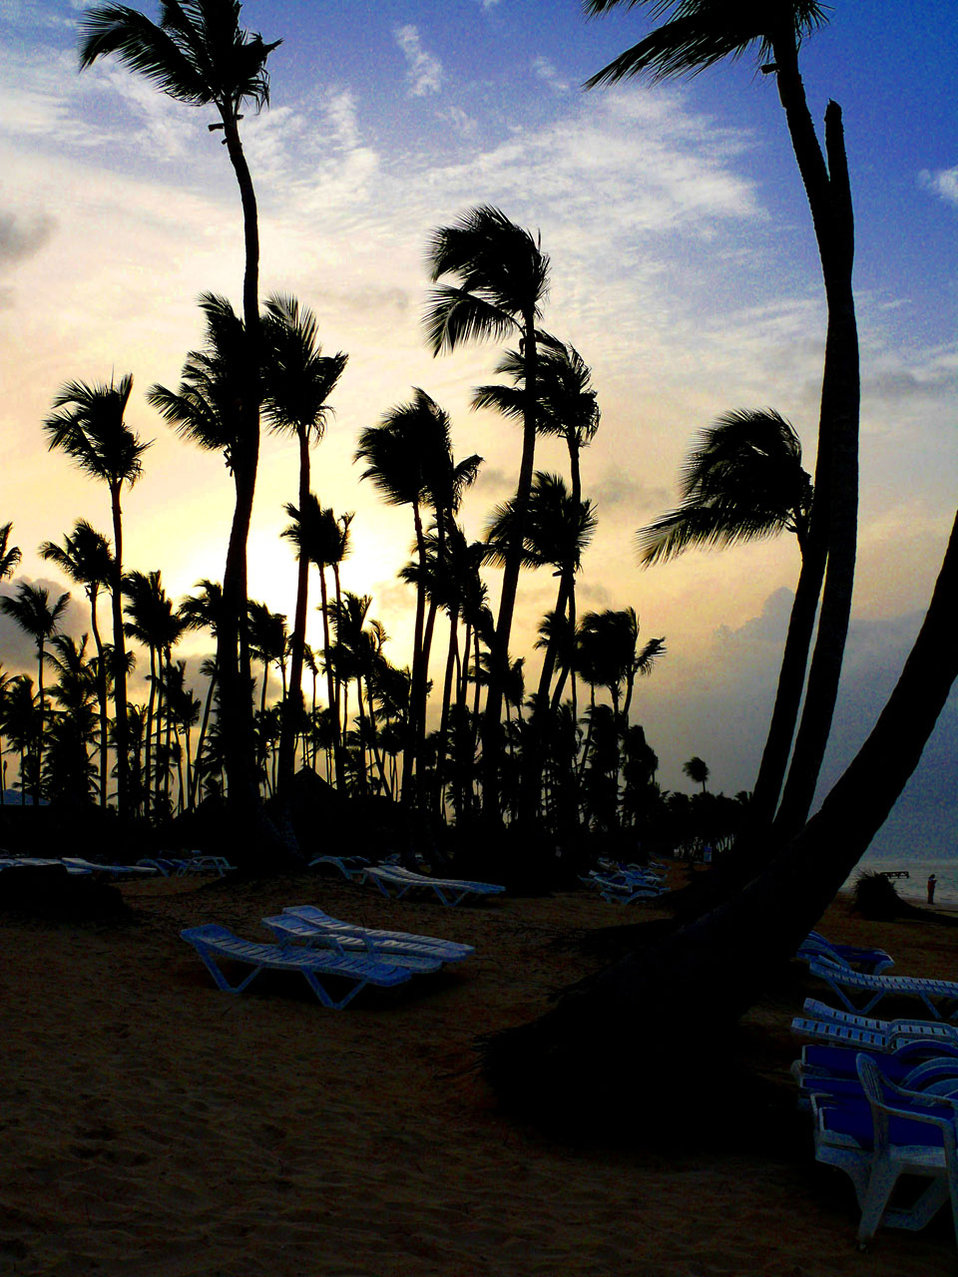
Beach uvero alto.